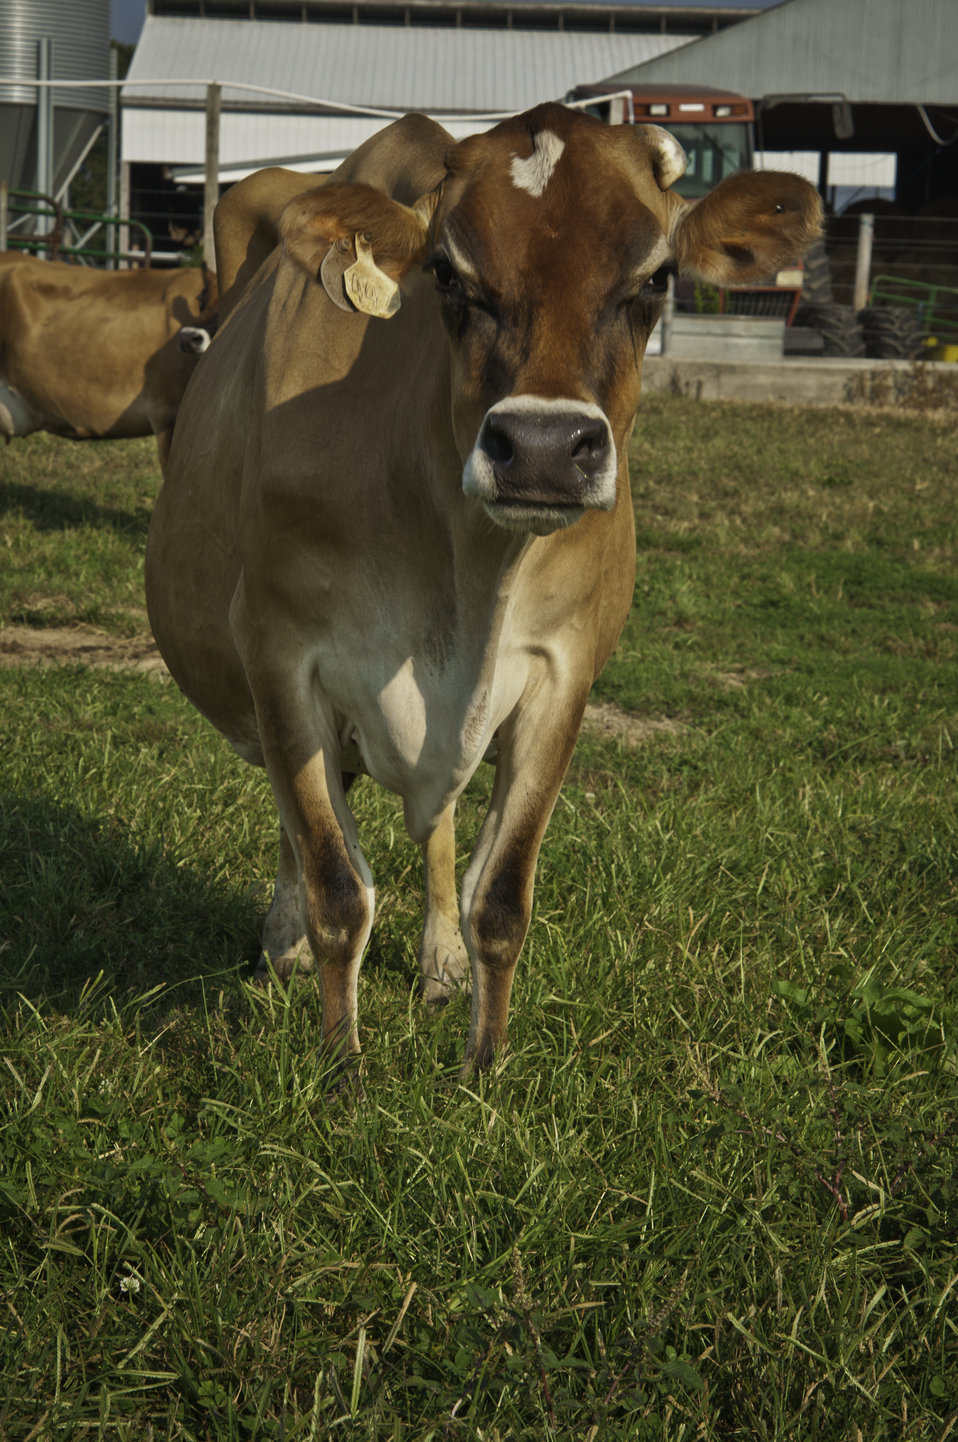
Jersey and Holstein cows of Chapel’s Country Creamery in Easton, MD graze on grass at the farm. The dairy produces artisanal cheeses with high quality fresh raw milk, rich in cream. The cows graze on clover and rye grass on 45 acres of pasture. The cows are rotated among 32 different pastures to insure that the cows are eating the freshest and most nutritious part of the grass thus providing the highest quality of raw milk that is rich in cream. The milk is all-natural and contains no synthetic hormones, antibiotics, or chemical compounds.